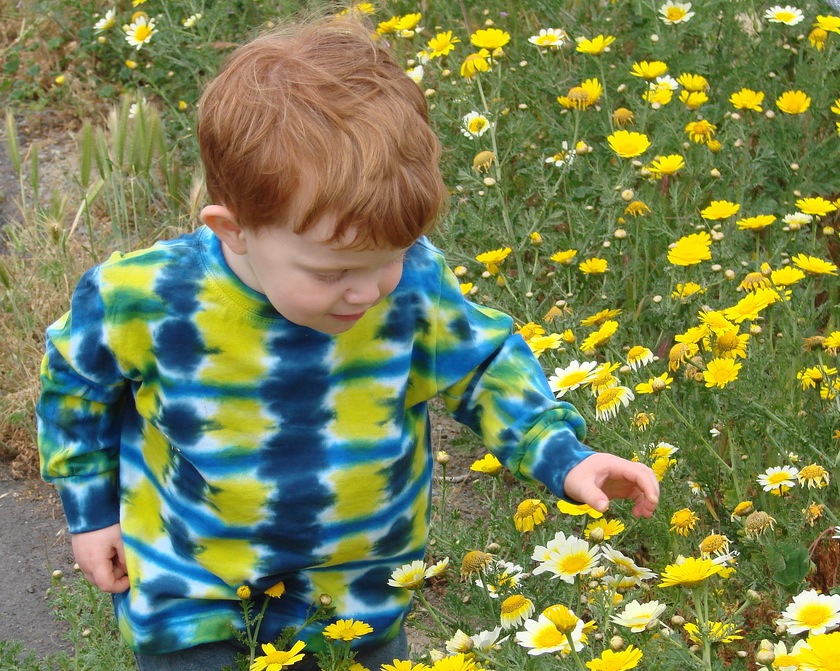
Child among wildflowers

A sense of wonder comes naturally to this 2 1/2-year-old boy on a family hike.
San Diego National Wlldlife Refuge, CA
(Photo: Martin LaBar, Creative Commons)

In February, 2012, the Service released its plan to implement the Conserving the Future Vision, which was developed during a conference in July, 2011.